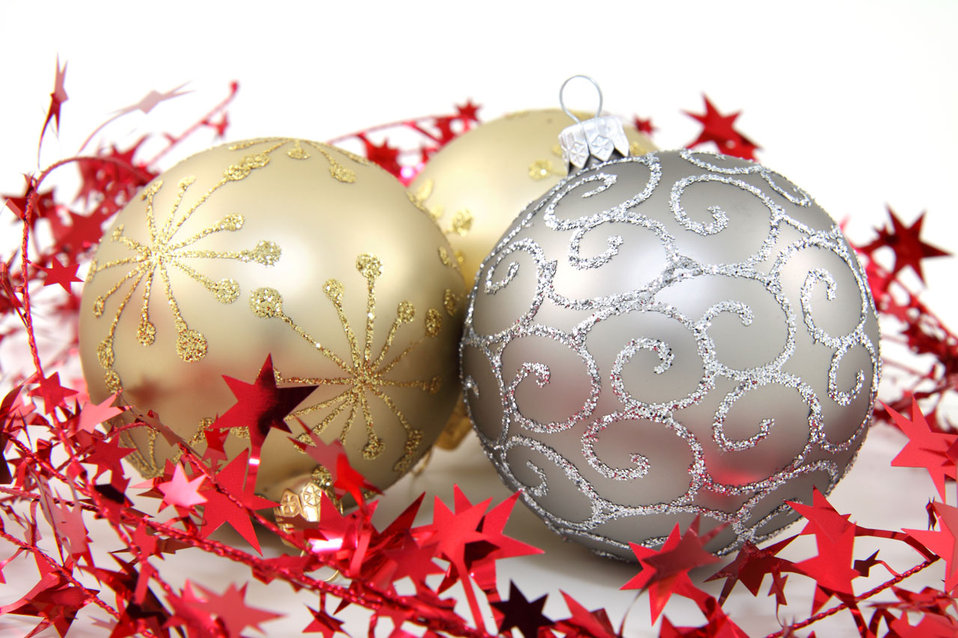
Christmas baubles

Three golden and silver christmas baubles.